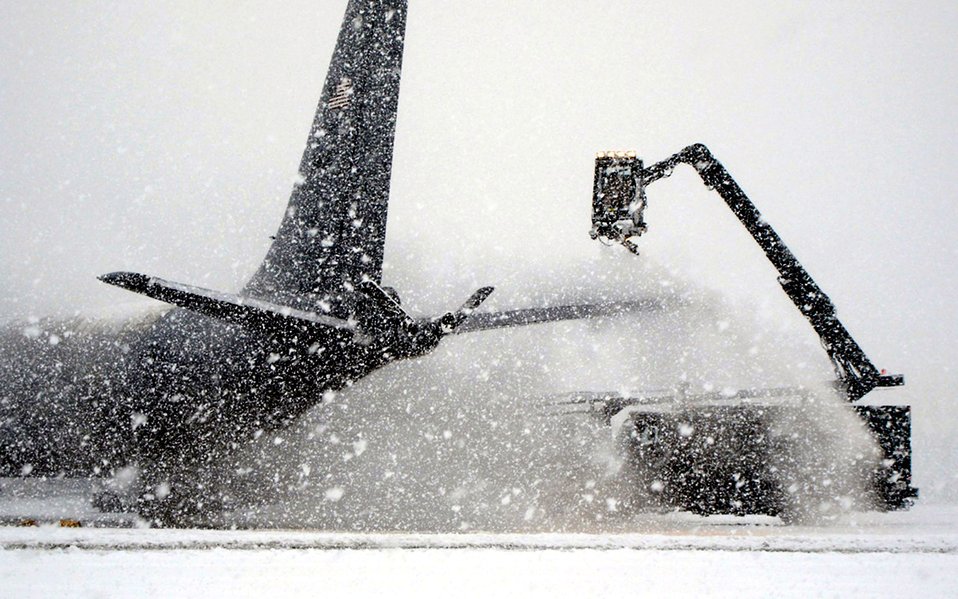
Airmen keep misson running despite subzero tempatures

A de-icer clears snow off a KC-135 Stratotanker prior to a launch from Manas Air Base, Kyrgyzstan, to Afghanistan on a mission in support of Operation Enduring Freedom.